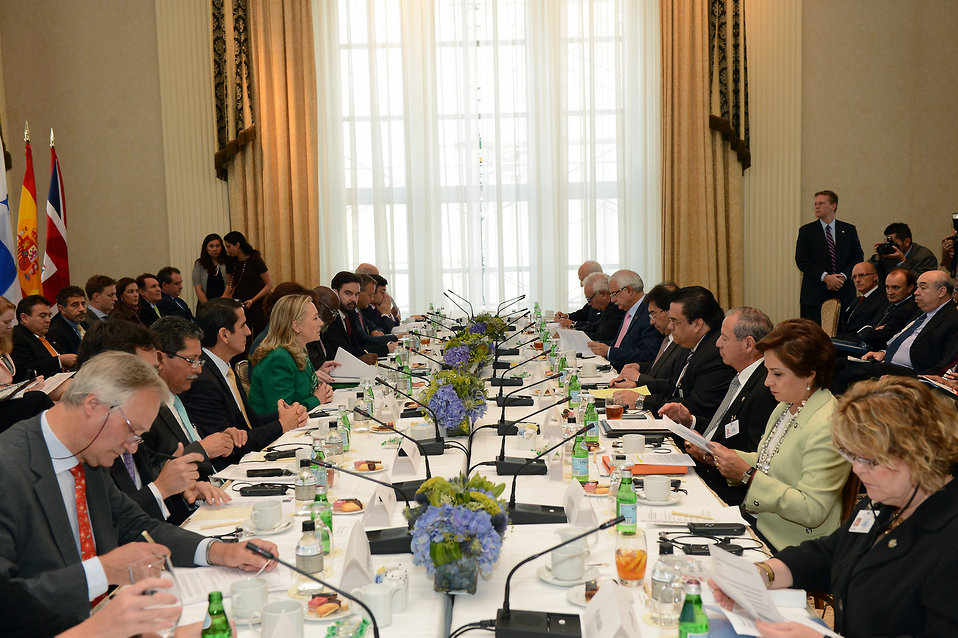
Secretary Clinton Delivers Remarks at a Meeting With Central American Foreign Ministers

U.S. Secretary of State Hillary Rodham Clinton delivers remarks at a meeting with Central American Foreign Ministers in New York, New York on September 27, 2012.